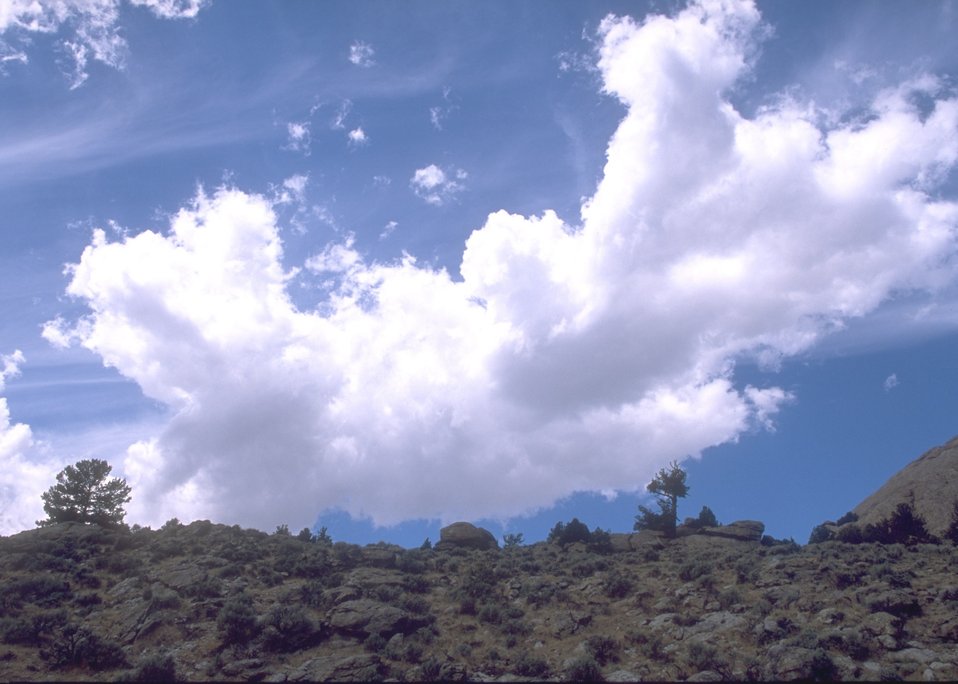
Landscape near Devil's Gate historic site, Rawlins Field Office.